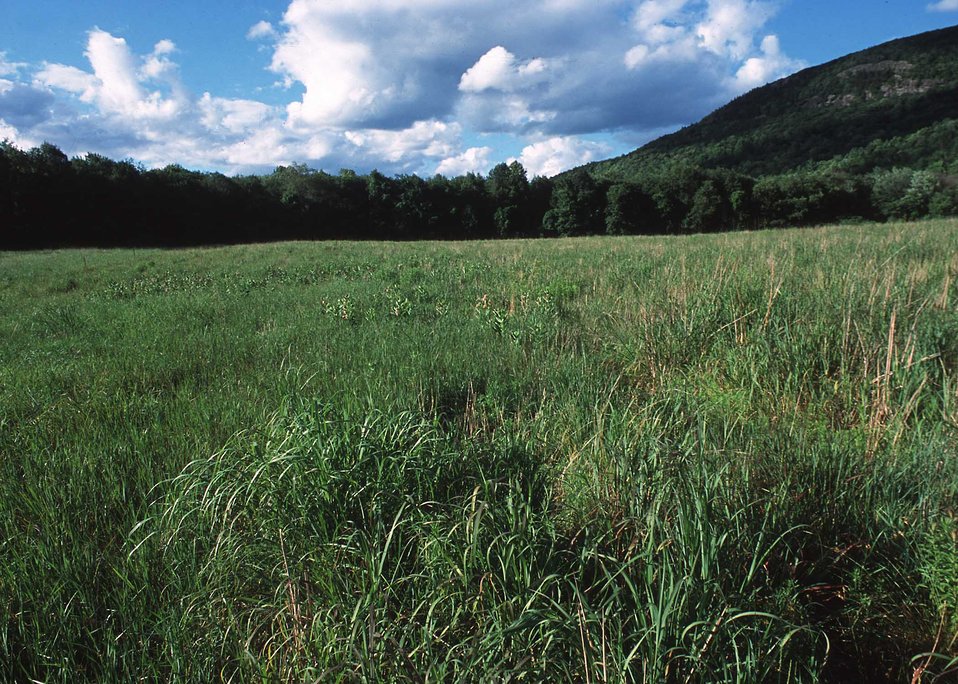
A landscape with grass and hills

A warm season grassland habitat landscape in Litchfield County.